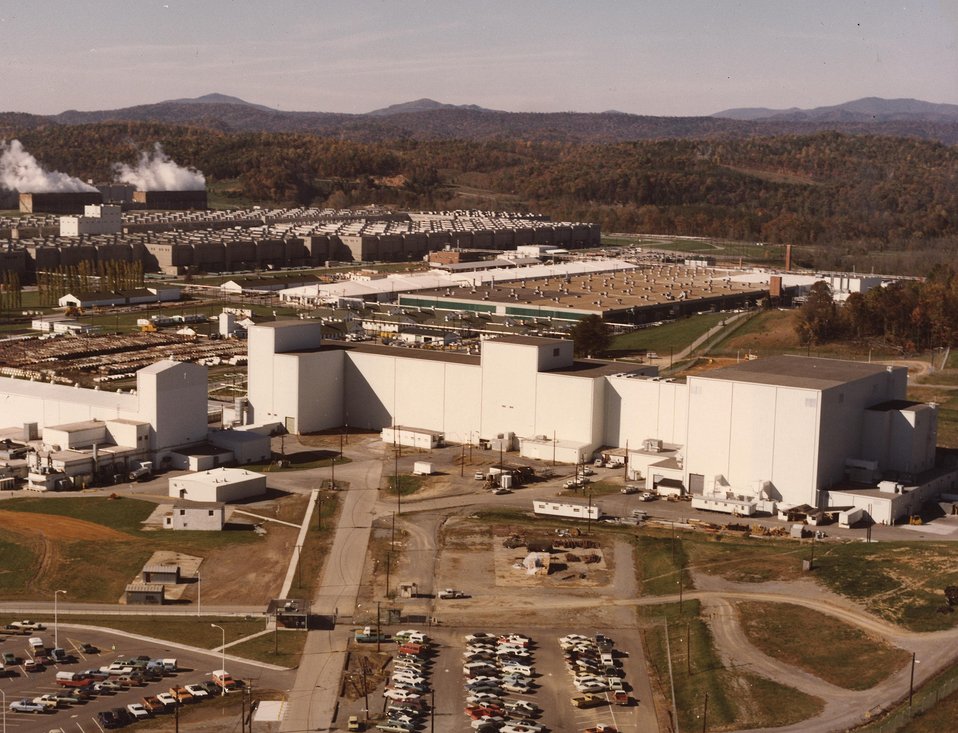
The Energy Research and Development Administration. c. 1975